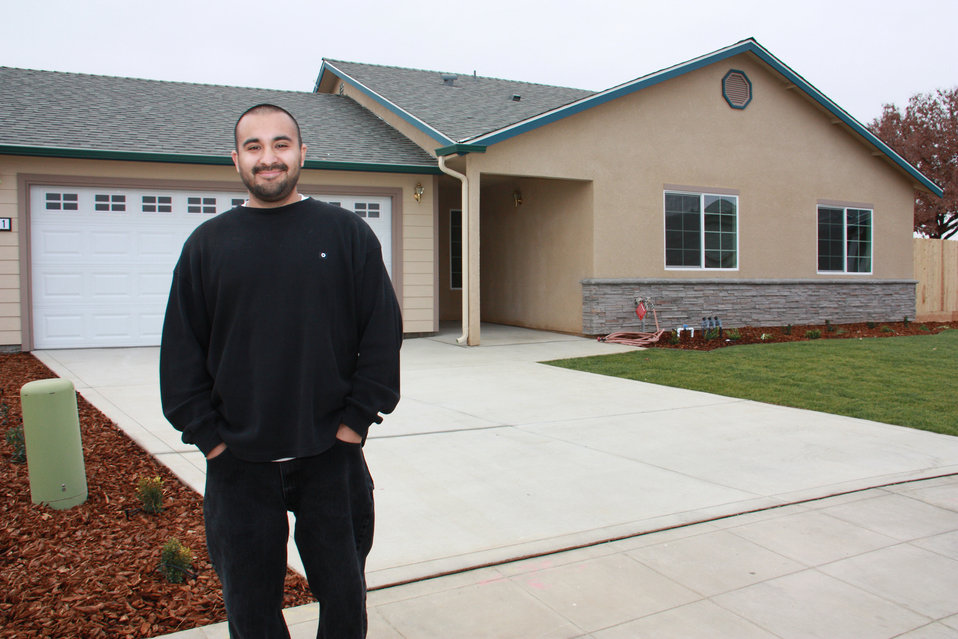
Tapia

Robert Tapia, a single father of two, is pictured outside the Reedley, CA home he proudly helped build with ten other families through the U.S. Department of Agriculture's (USDA) Mutual Self-Help Housing Loan program in partnership with Self-Help Enterprises, which celebrated the completion of its 6,000th home last week.